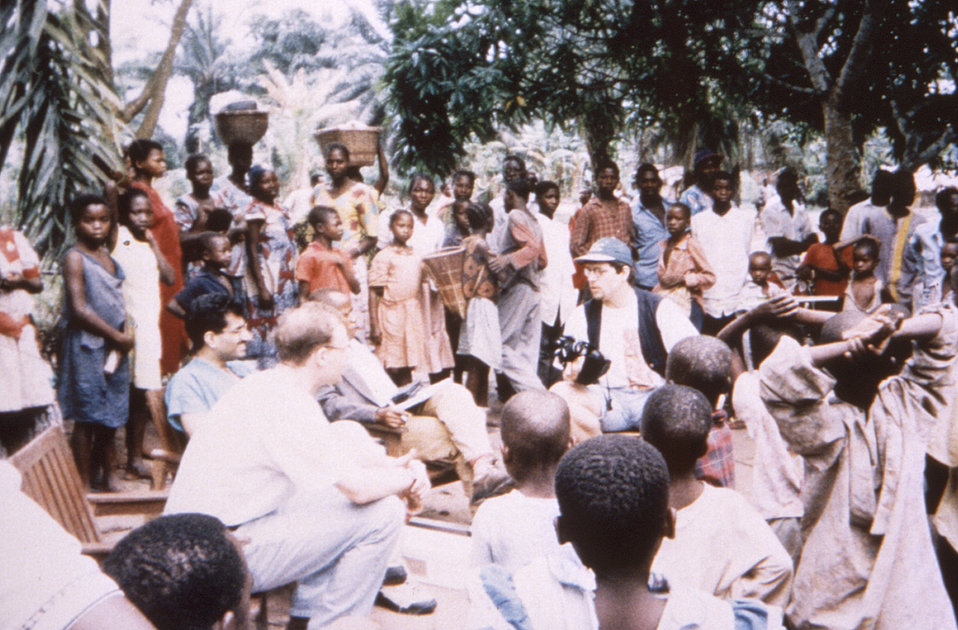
This image was created during an investigation into an outbreak of monkeypox, which took place in the Democratic Republic of the Congo (DRC), 1996 to 1997, formerly Zaire. In this particular view, a group of epidemiologists were gathered with a number of Katako-Kombe Health Zone villagers, as they were discussing the distribution, and administration, of epidemiologic questionnaires. Leading this group, was E.I.S. Officer, Yvan Hutin, M.D.